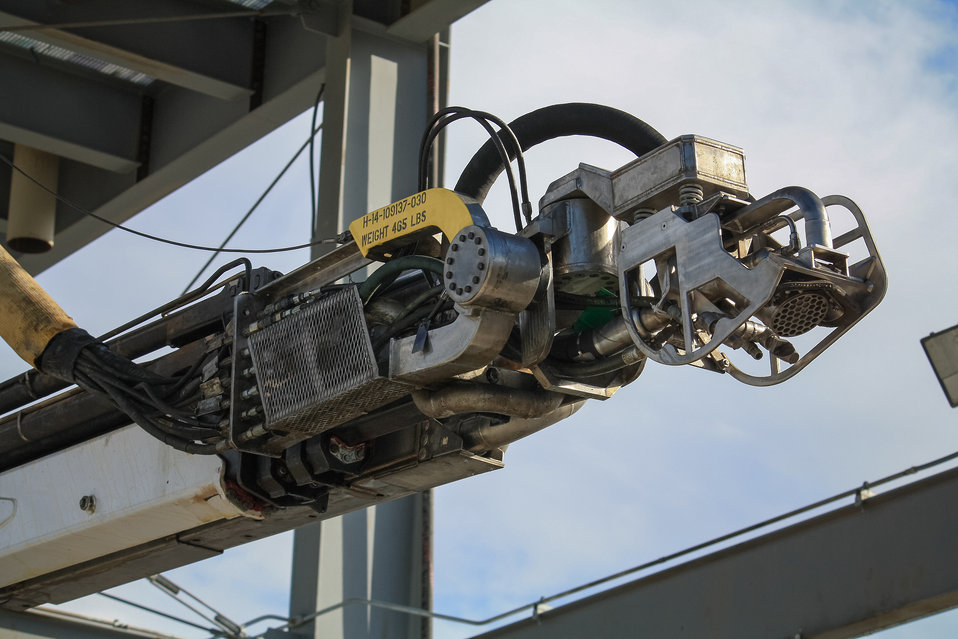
This retrieval tool is vacuum version of the Mobile Arm Retrieval System that was developed to extend inside the tank to reach waste at all parts of the tank more effective retrieval while using less liquid.

This MARS-V is intended for deployment in C-105, a tank that has possibly leaked since it was placed in service in the 1940s making it a good candidate for this 'dry' retrieval method.